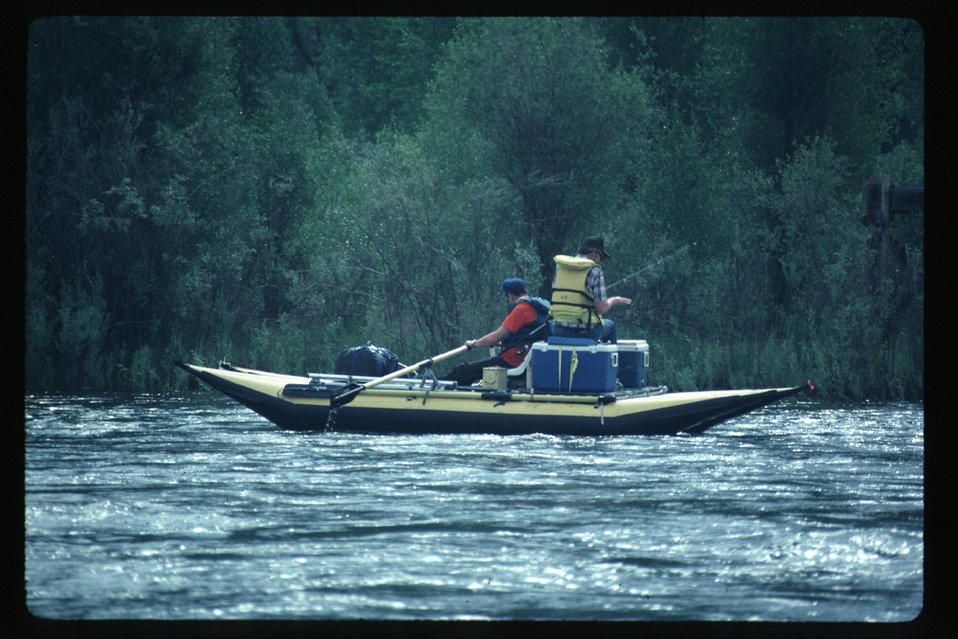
Rafting and fishing South Fork of Snake River Idaho Falls Field Office USRD Upper Snake River District